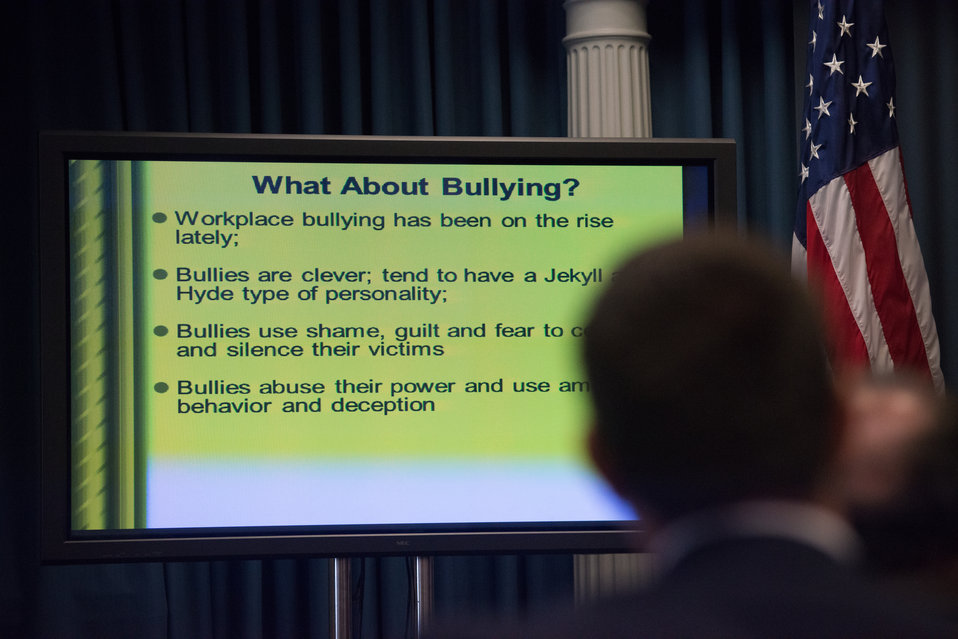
Bureau of Engraving and Printing Alternative Dispute Resolution Steering Committee member and mediator Leonardo Rowe leads the forum on Workplace Bullying during the U.S. Department of Agriculture (USDA) Rural Development’s (RD) 2nd Annual Cultural Transformation kickoff opening ceremony and forums, themed “Employees Influencing Change,” on Tuesday, Aug. 13, 2013 at USDA in Washington, D.C.